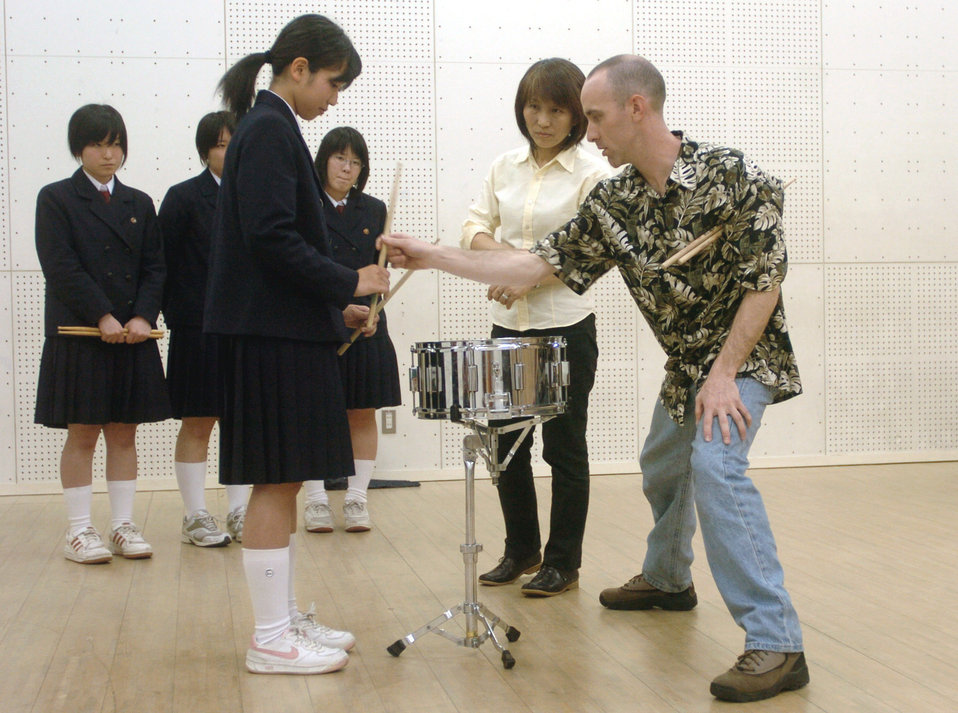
Music lessons

MATSUYAMA, Japan -- Staff Sgt. Marshall Gentry (right) teaches Japanese high-school students proper snare-drum techniques during a music clinic here April 15. Sergeant Gentry is a percussionist with the U.S. Air Force Band of the Pacific-Asia at Yokota Air Base, Japan.